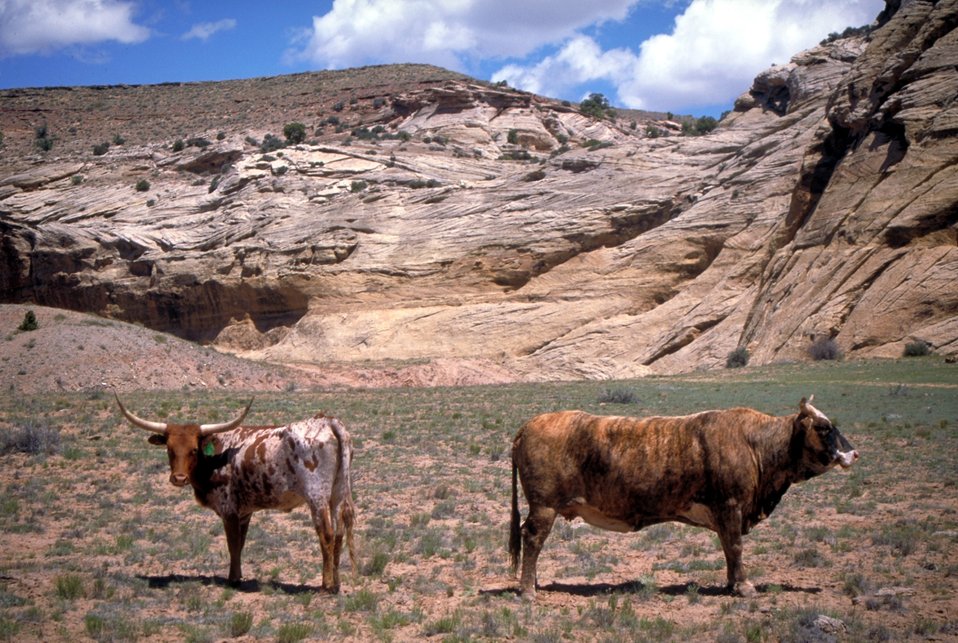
Livestock in the San Rafael Swell.